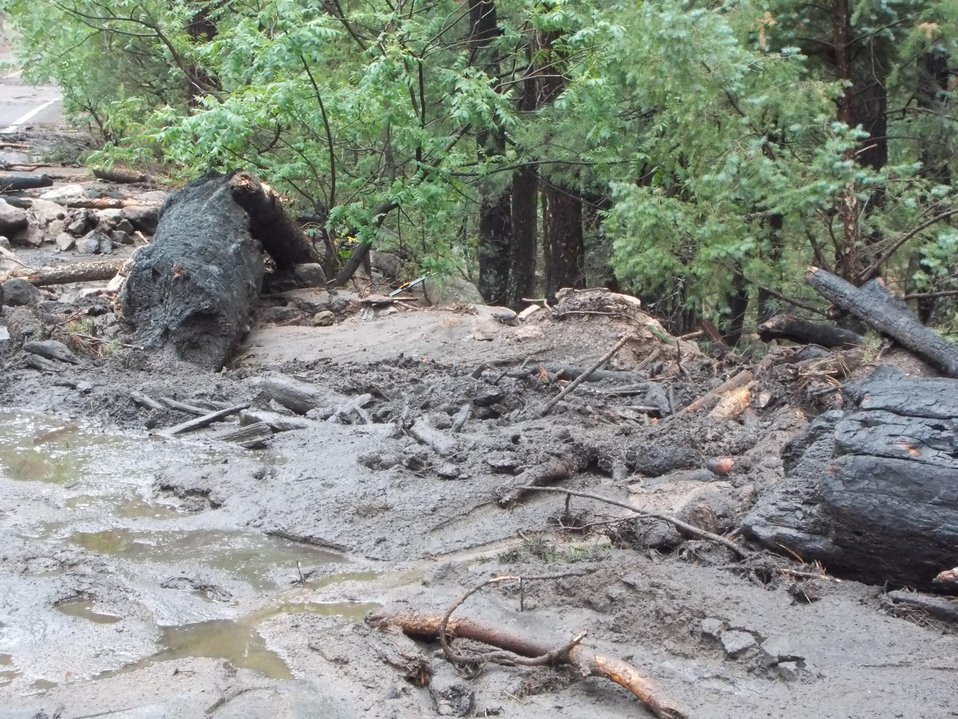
Debris is brought down to NM Hwy 152 after a thunderstorm due to the Silver Fire near Kingston, NM. The Silver Fire in Gila National Forest near Kingston, NM began on Jun. 7, 2013 by a lightning strike, has burned an estimated 138,705 acres and is 85% contained.